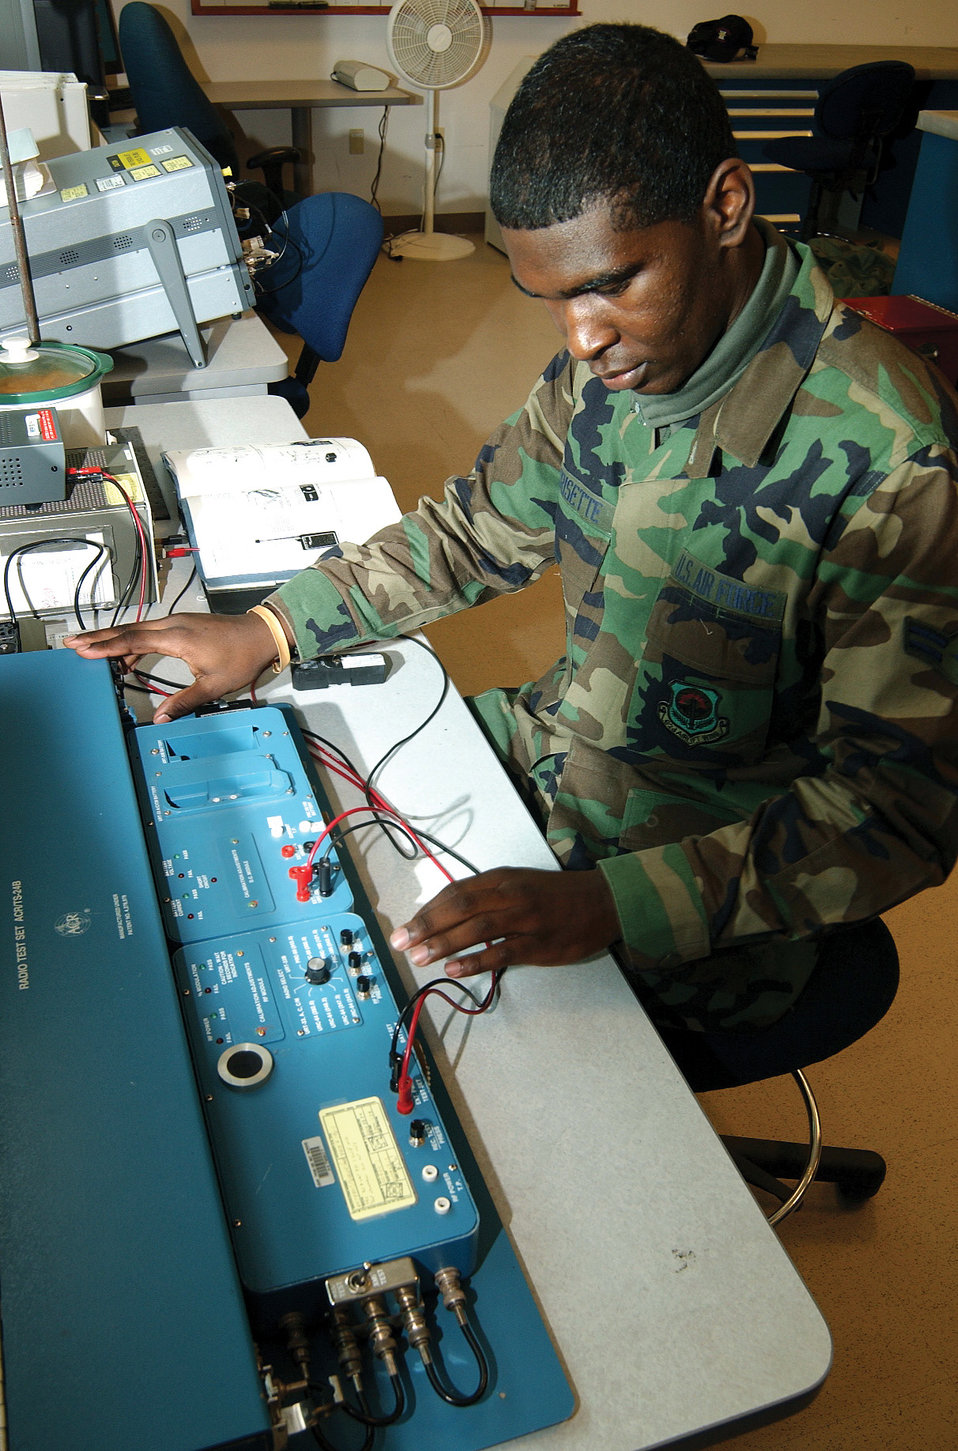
Parachute inspections

MCCHORD AIR FORCE BASE, Wash. -- Airman 1st Class Keith Morisette performs an inspection on a parachute beacon using a beacon tester here recently. Airman Morisette is assigned to the 62nd Operation Support Squadron.